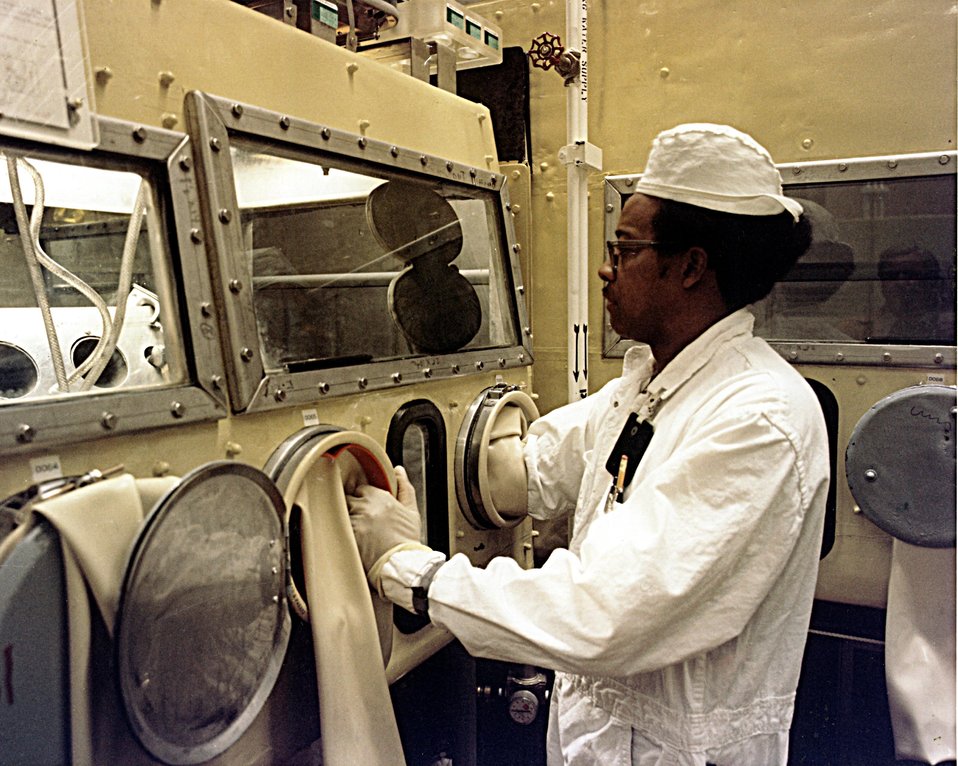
TYPICAL GLOVE BOX OPERATION WITH FIGURE-EIGHT INGOT OF PLUTONIUM IN FRONT OF OPERATOR, BUILDING 707, MODULE K.

ALL PLUTONIUM OPERATIONS AT THE PLANT ARE CARRIED OUT IN HIGHLY SPECIALIZED FACILITIES, PROTECTING THE EMPLOYEES AND THE SURROUNDING POPULATION AND ENVIRONMENT.